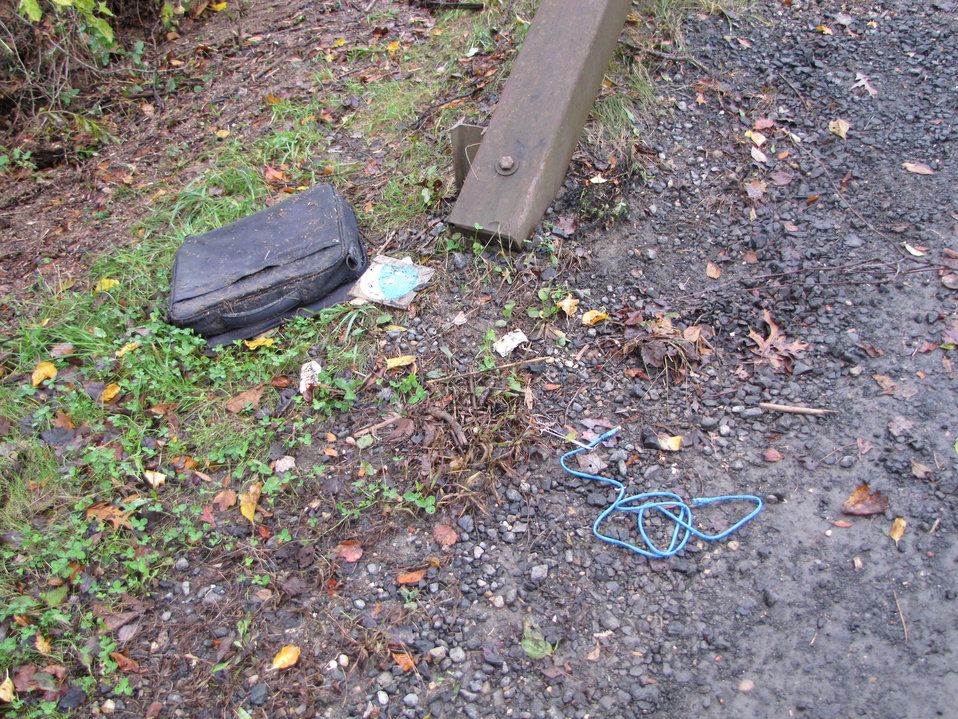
Debris brought in by Hurricane Sandy (NY)

Some of the trash brought ashore during the storm surge, Wertheim National Wildlife Refuge, part of the Long Island National Wildlife Refuge Complex.